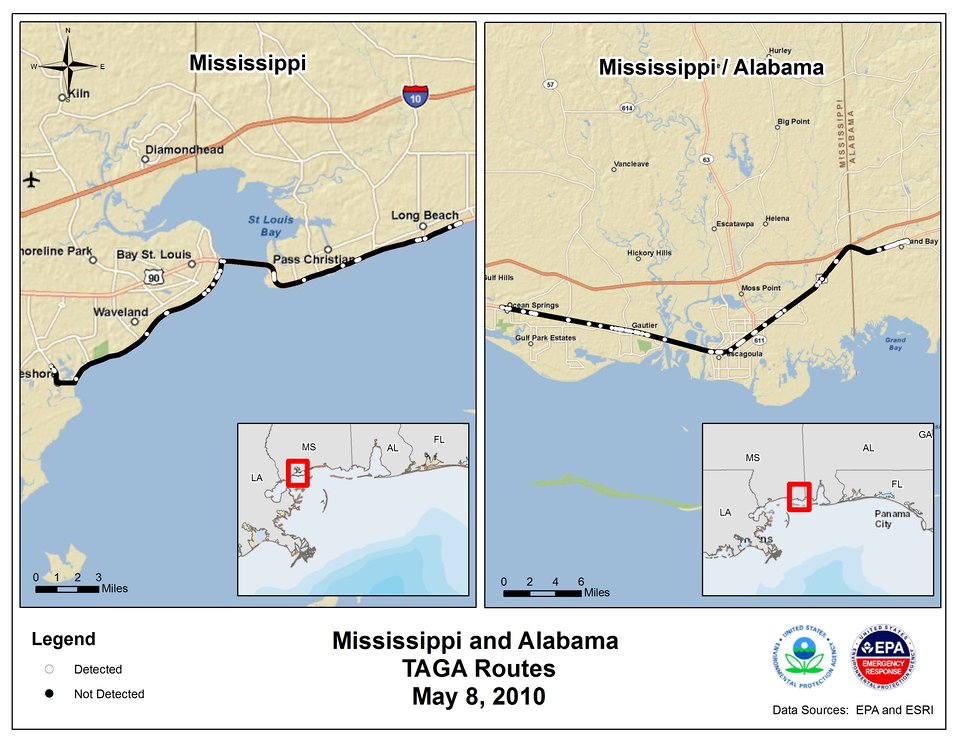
EPA TAGA Air Monitoring Locations May 8, 2010